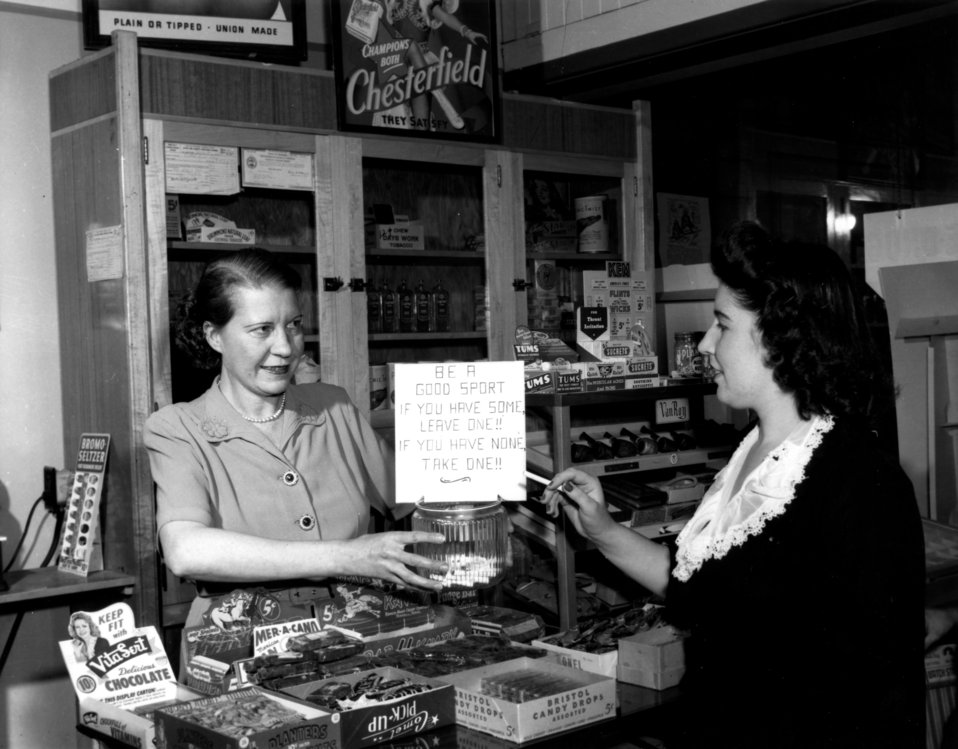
Business activity at Oak Ridge